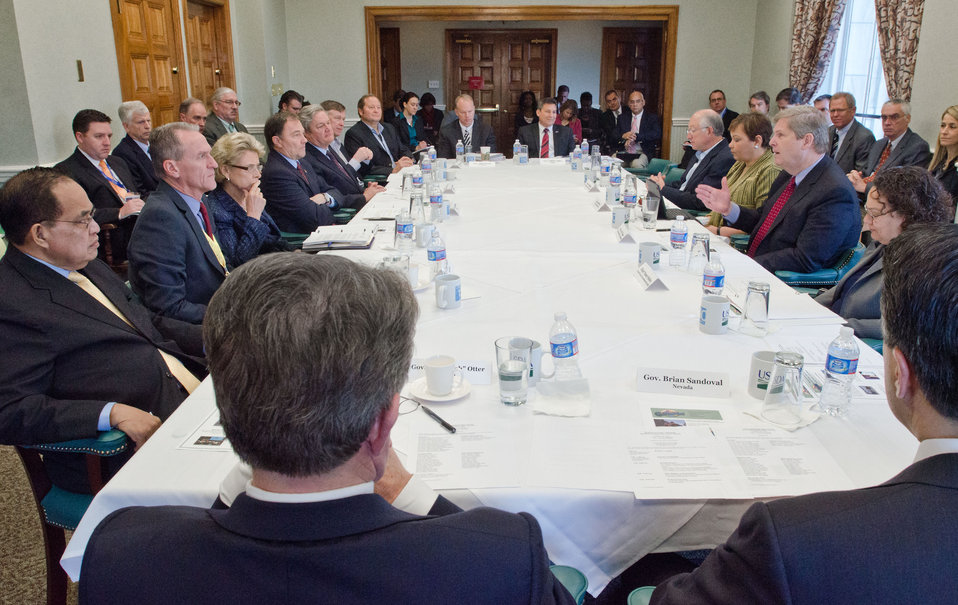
Agriculture Secretary Tom Vilsack hosted a breakfast for Western Governors and Federal Officials, in the Lincoln Room and the Secretary's Dining room at the United States Department of Agriculture headquarters, in Washington, D.C., on Sunday, February 26, 2012.